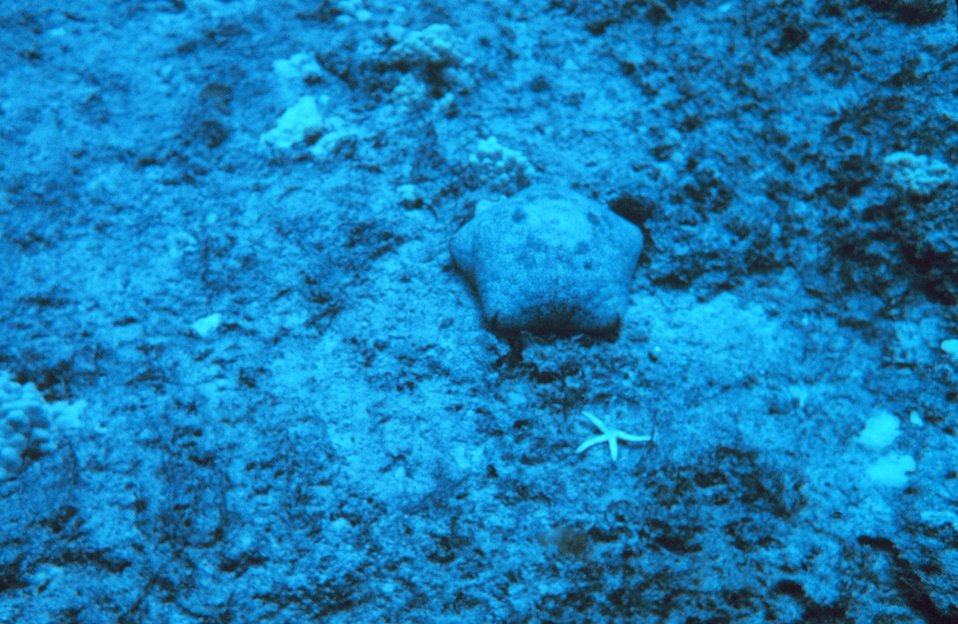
Cushion starfish with smaller starfish species in situ.